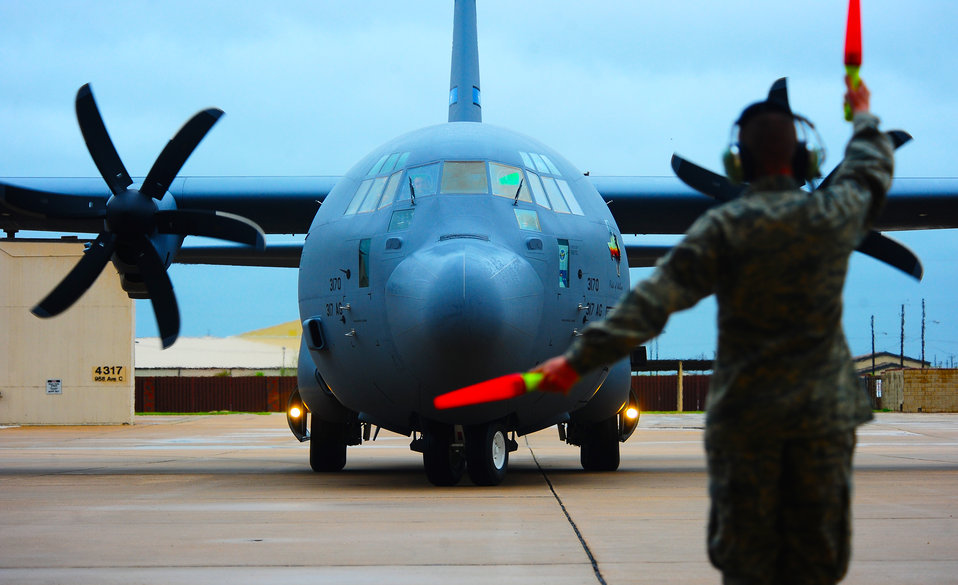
Super Herc

Air Force Chief of Staff Gen. Norton Schwartz taxis a new C-130J Super Hercules to a parking spot at Dyess Air Force Base, Texas, April 16, 2010. This was the first of 28 C-130Js to be delivered to the 317th Airlift Group there.